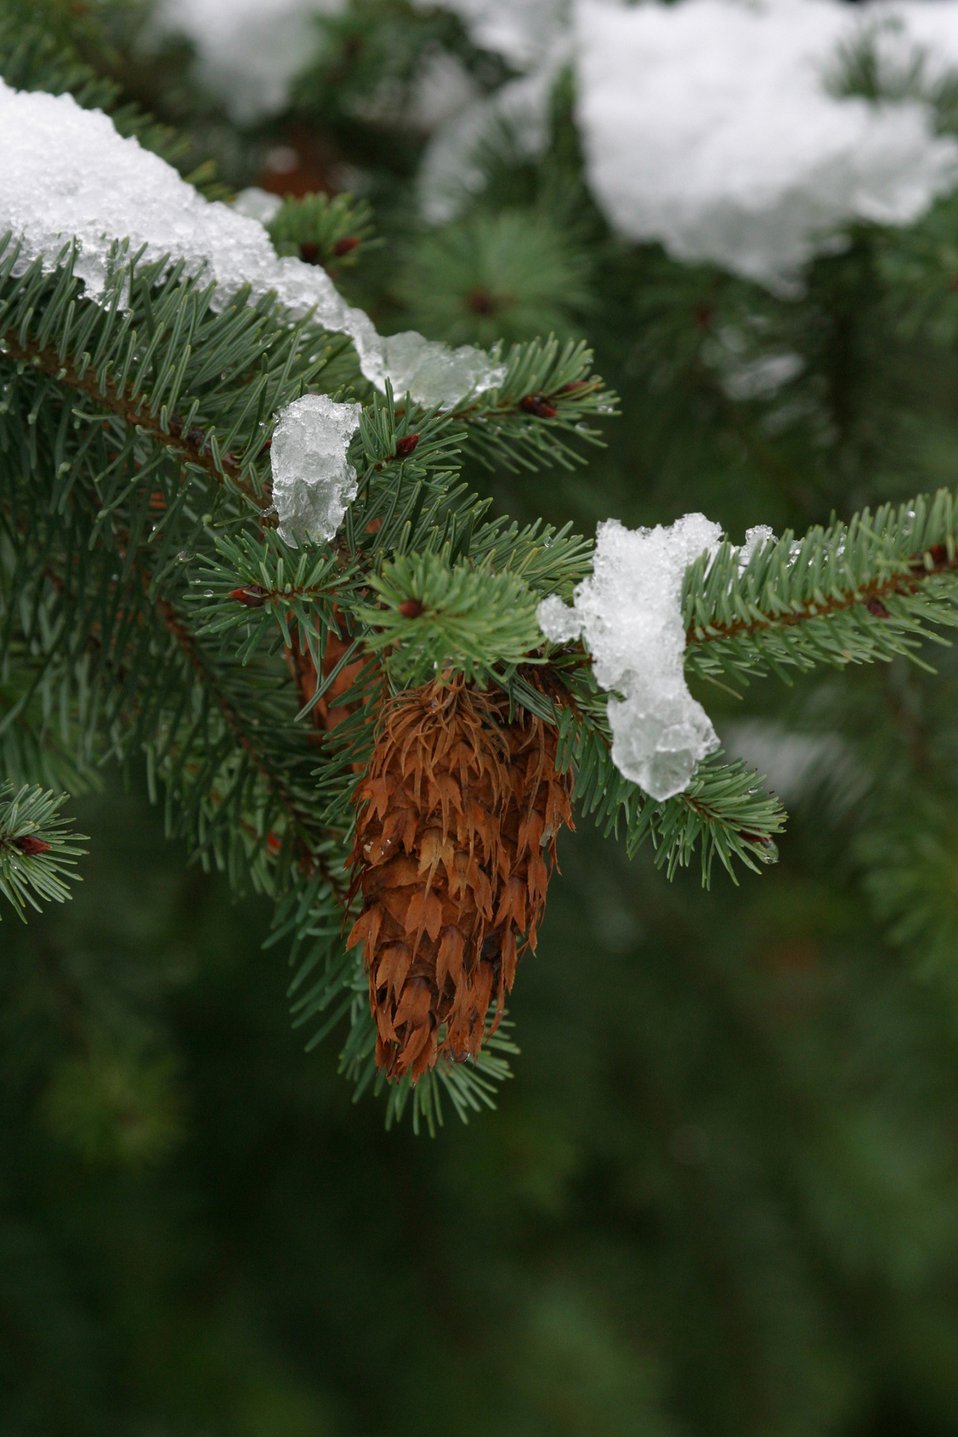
Snow and ice on Douglas Fir Bows and cones during the storm of January 2004.